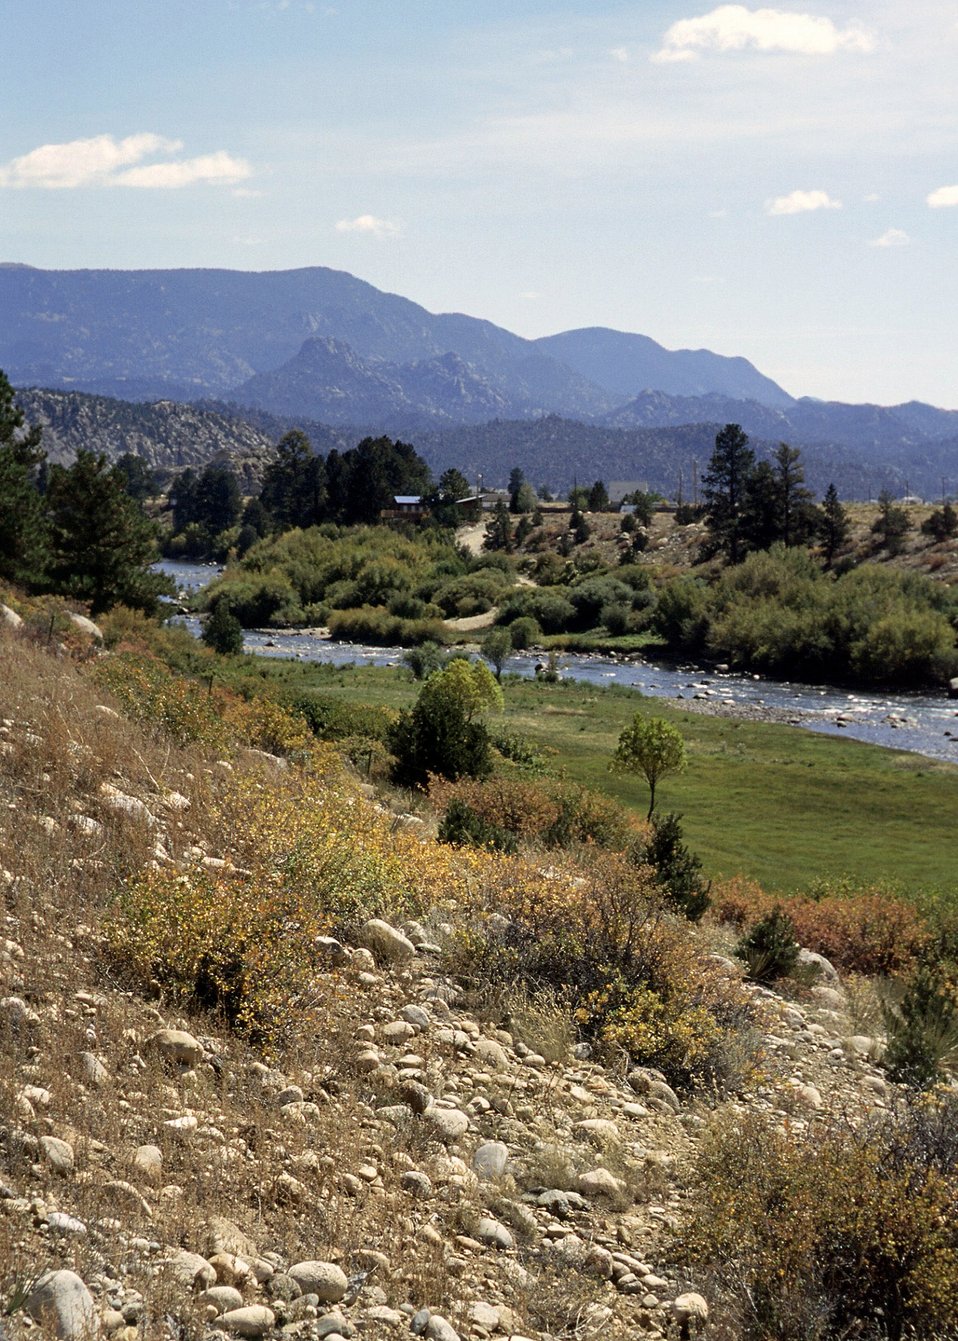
Arkansas River